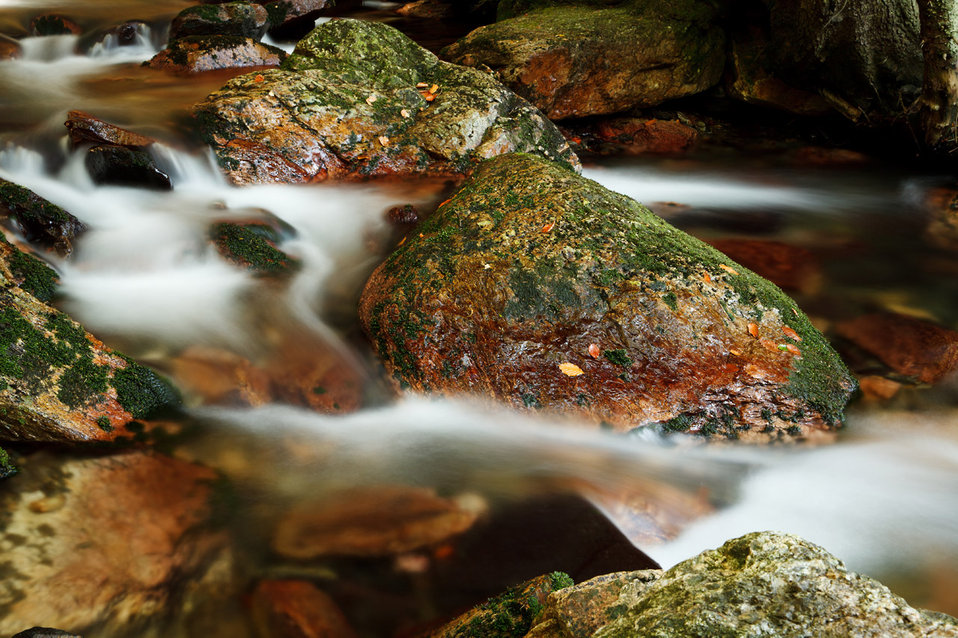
Rocks and mountain stream

Mountain stream in motion with blurred water.